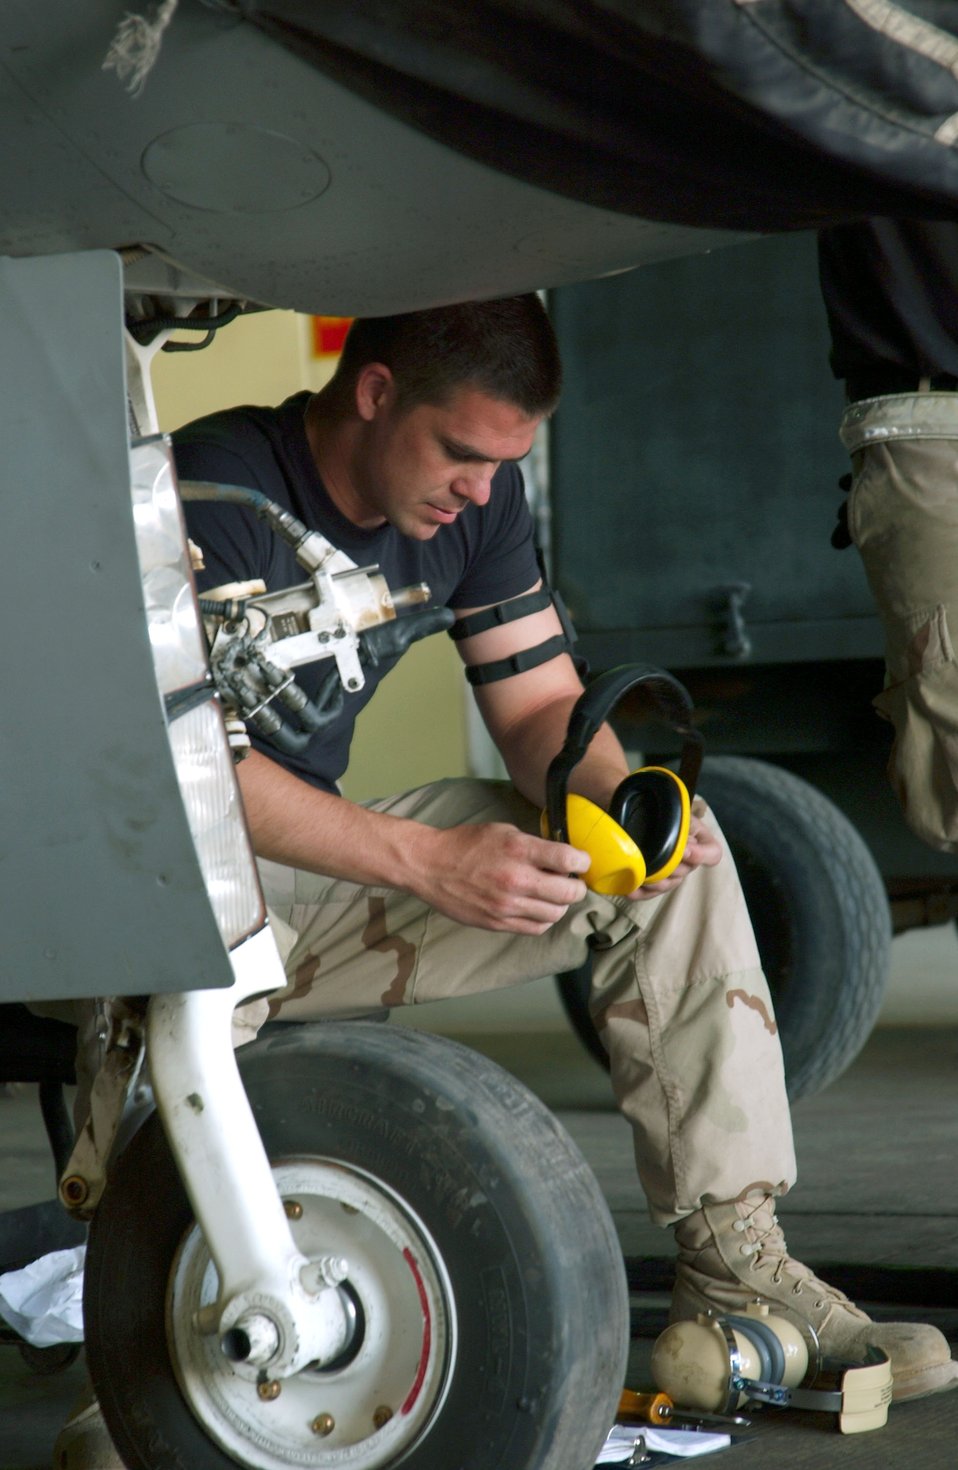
Maintenance teams work to keep F-16s flying

Airman 1st Class James Ballard studies the technical orders of an F-16 Fighting Falcon at Balad Air Base, Iraq. The phase teams work around the clock to get two squadrons of F-16s inspected and flying in three days on average. Airman Ballard is assigned to the 332nd Expeditionary Maintenance Squadron.